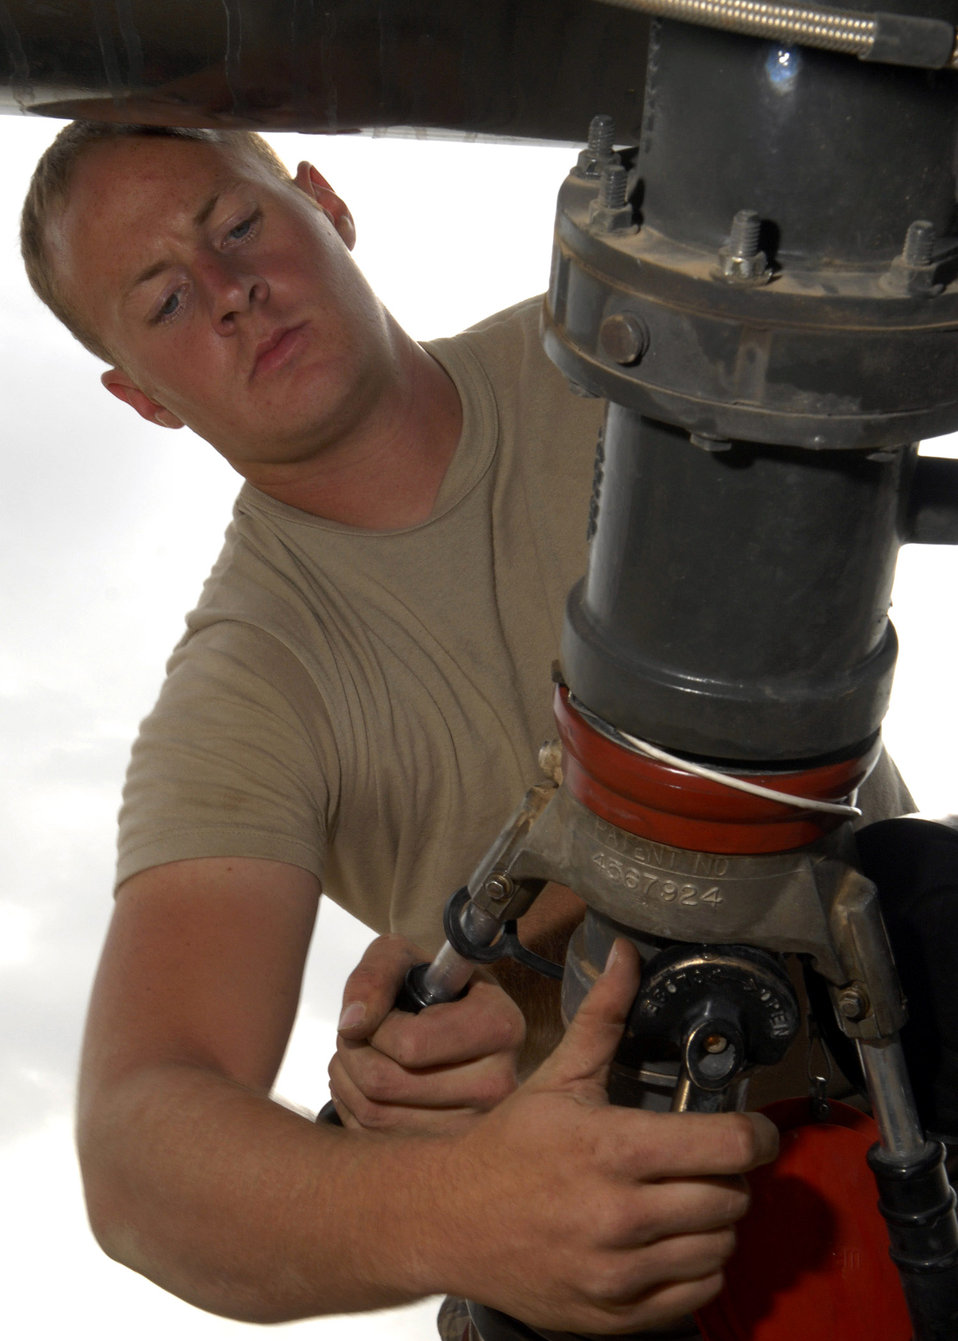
Fuel gauge

Senior Airman Justin Collins connects a pump to transfer fuel from a storage cell to a refueling truck Oct. 17 at Balad Air Base, Iraq. The 332nd Expeditionary Logistics Readiness Squadron provides fuel for all aircraft and generators here. Airman Collins is assigned to the 332nd ELRS and is deployed from Little Rock Air Force Base, Ark., where he is a member of the 314th Logistics Readiness Squadron.